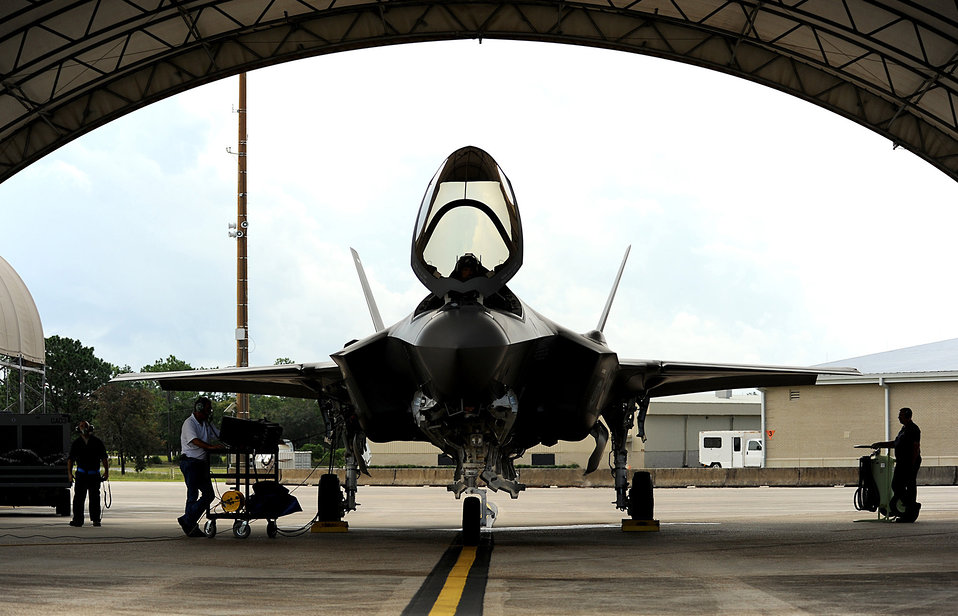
F-35 A reaches 500th sortie

F-35A Lightning II joint strike fighter maintainers from the 58th Aircraft Maintenance Unit at Eglin Air Force Base, Fla., preflight the jet before taking off for a local training mission over the Emerald Coast Sept. 18, 2012.